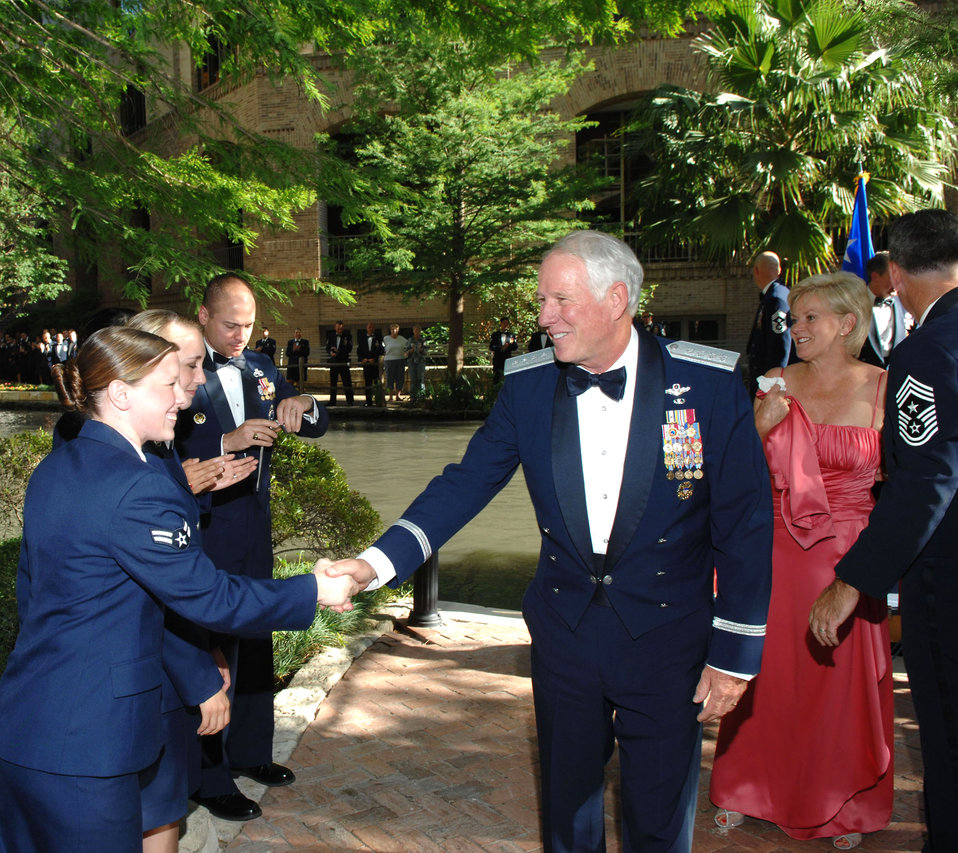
Enlisted members give highest honor to AETC commander

Gen. William R. Looney III greets an Airman after arriving for the Order of the Sword presentation ceremony May 30 in San Antonio. Members of the command presented General Looney with the highest honor enlisted Airmen can give a leader. General Looney is the commander of Air Education and Training Command.